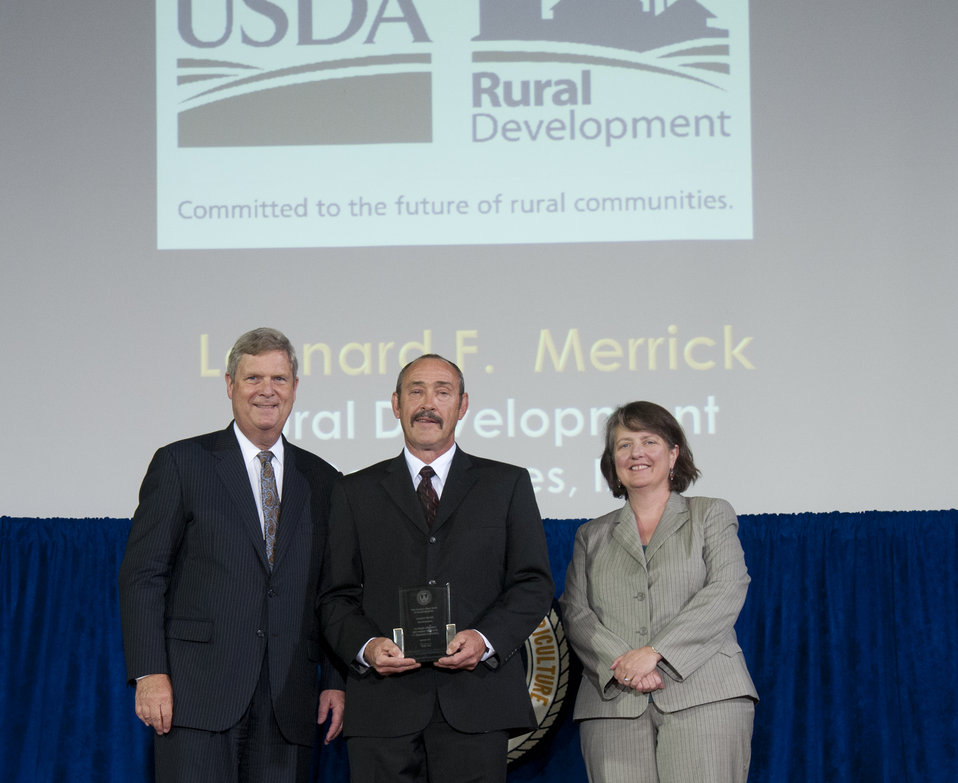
Agriculture Secretary Tom Vilsack and Agriculture Deputy Secretary Kathleen Merrigan present the Secretary’s Honor Award for Personal and Professional Excellence to Rural Development (RD) employee Leonard F. Merrick at the U.S. Department of Agriculture (USDA) 64th Annual Honor Awards Ceremony in Washington, D.C. on Wednesday, Sept. 12, 2012. Merrick received his award for outstanding achievement demonstrated by system delivery improvement, training, oversight and handling challenges associated with 591 environmental and 1,220 technical reviews for USDA Rural Development in Iowa since 2009.